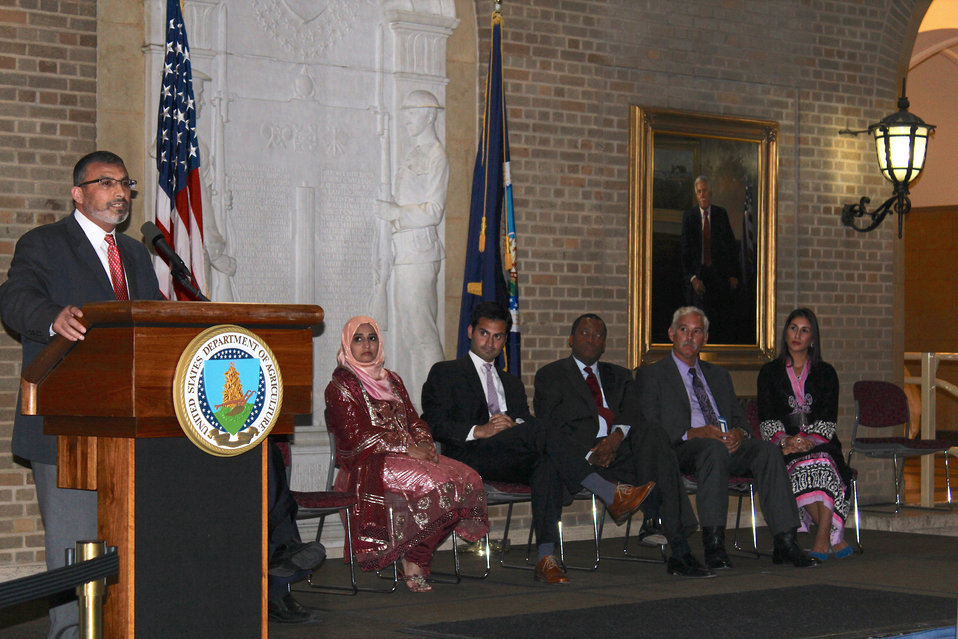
IRUSA President Dr. Abed Ayoub speaks at the U.S. Department of Agriculture (USDA) fifth annual Ramadan dinner held on the USDA Whitten Building patio on Thursday, Aug. 1, 2013. For the second year in a row, Islamic Relief USA had the privilege of sponsoring the event’s dinner. Islamic Relief USA works with the USDA as well as numerous other organizations to help alleviate hunger. In one joint initiative with the USDA, IRUSA helps support community organizations across America that provide summer meals to low-income youth who rely on free or reduced-cost school lunches during the school year.